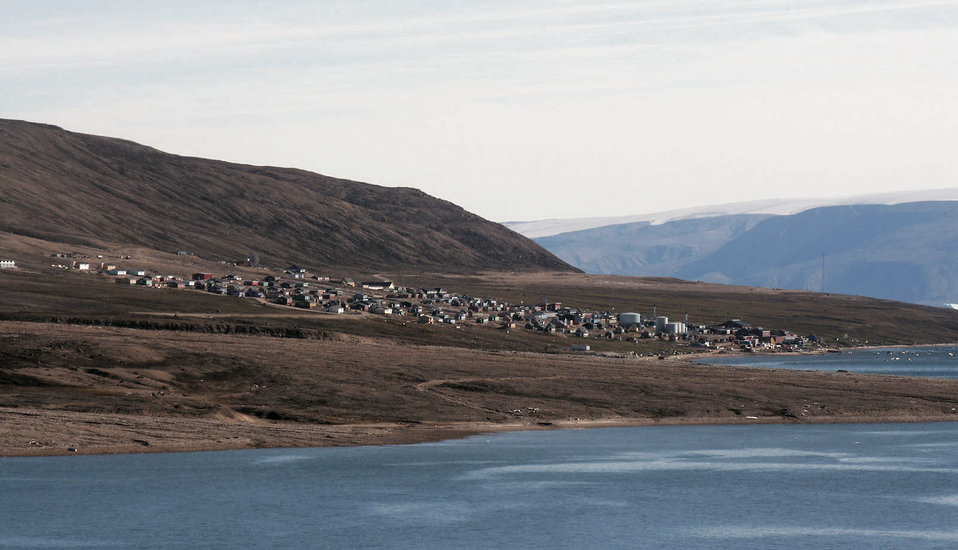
Thule members support local medical evacuation

Members of Thule Air Base, Greenland, supported a medical evacuation in mid June for a woman who had been stabbed in the village of Qaanaaq, located approximately 65 miles north of the base. Qaanaaq is home to about 600 people. This photo was taken in late summer 2007 after the ice on the surrounding water had melted.